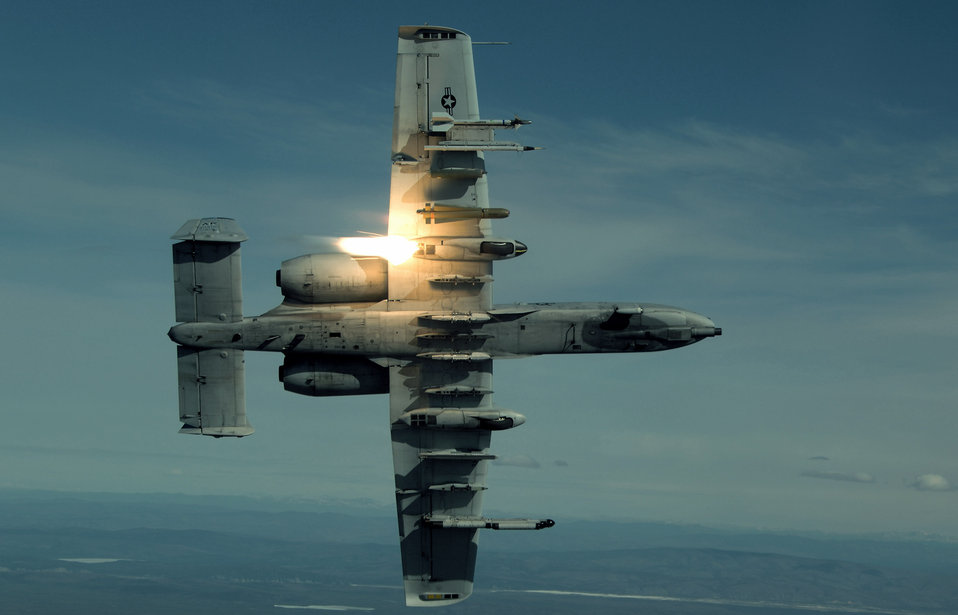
Feb. 17 airpower summary: A-10s protect ground forces

An A-10 Thunderbolt II, like this one, provides top cover and close-air support to coalition forces in Afghanistan and Iraq. The A-10s perform shows of force to deter enemy activities and protect ground forces.